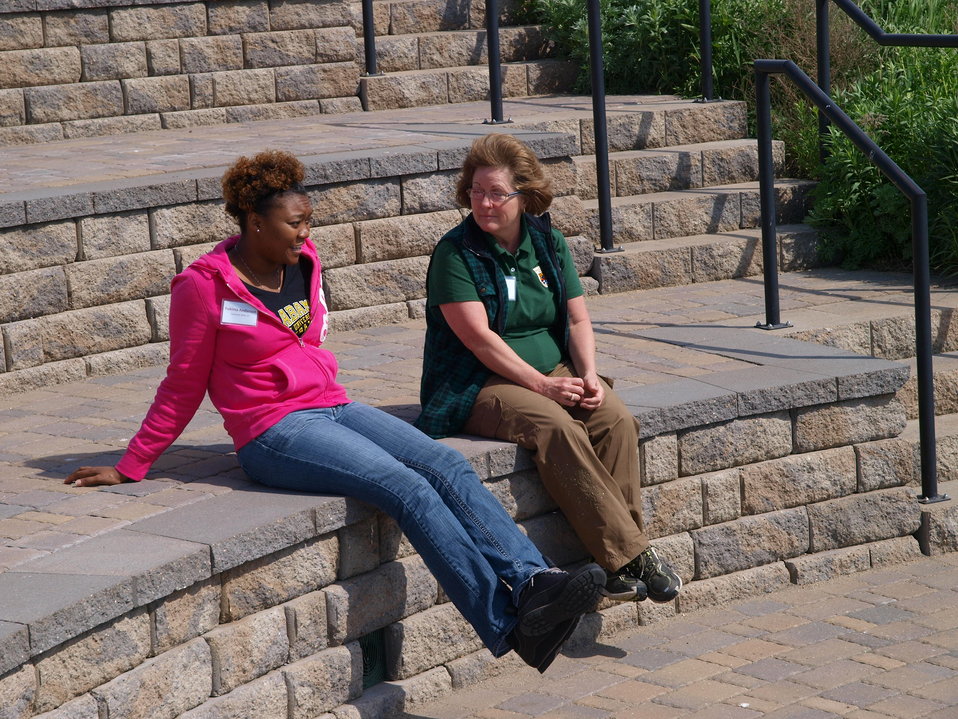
CDIP 2012 Fergus Falls

Raye and Yukima, getting acquainted.